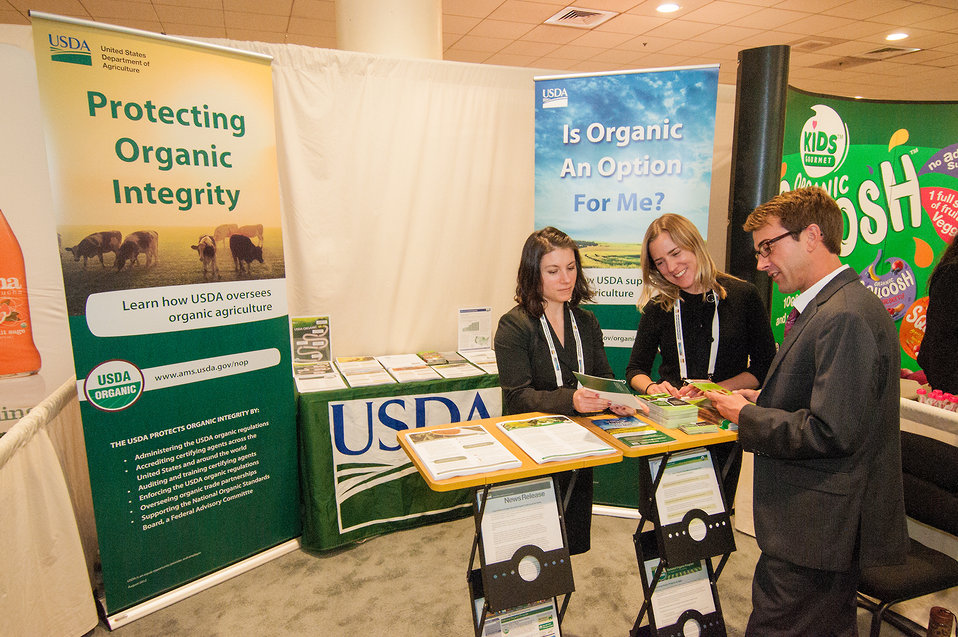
(L to R) U.S. Department of Agriculture (USDA) Agricultural Marketing Service (AMS) National Organic Program employees Lynnea Schurkamp, Kristin Thornblad and Sam Jones-Ellard review publications at the USDA National Organic Program booth at the Natural Products Expo East Conference in Baltimore, MD on Thursday, Sep. 26, 2013. USDA’s National Organic Program has helped farmers and businesses create an industry that today encompasses over 17,000 organic businesses in the U.S. alone, and has grown to $35 billion annually in U.S. retail sales. USDA continues to expand markets for American organic products abroad, works aggressively to break down barriers to trade, and assists U.S. farmers and businesses with the resources needed to reach consumers in a global marketplace.